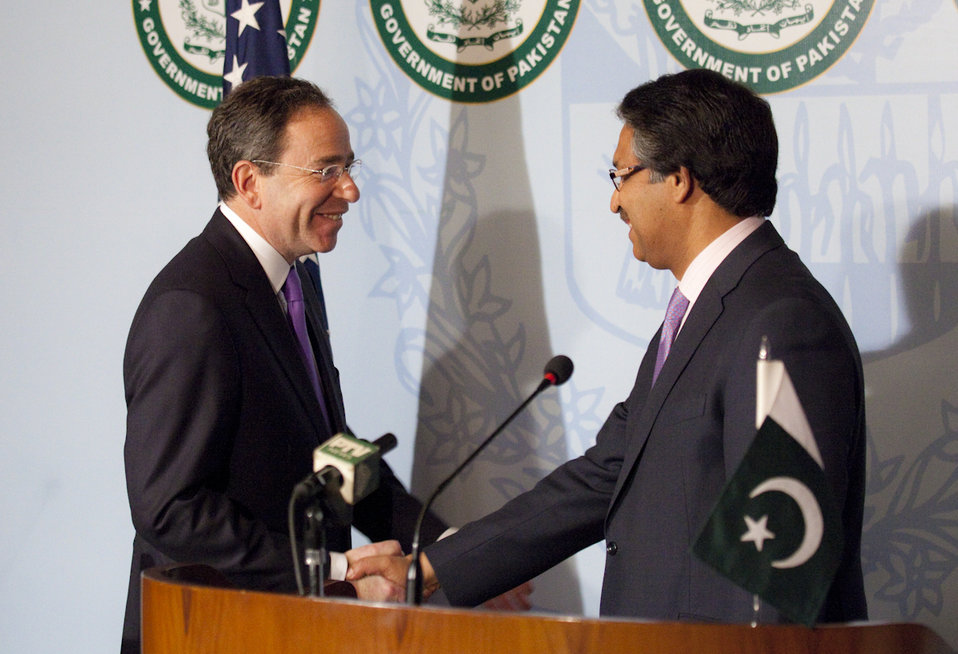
Deputy Secretary Nides Meets With Pakistani Foreign Secretary Jilani

U.S. Deputy Secretary of State Thomas Nides meets with Pakistani Foreign Secretary Jalil Abbas Jilani in Islamabad, Pakistan, on April 4, 2012.